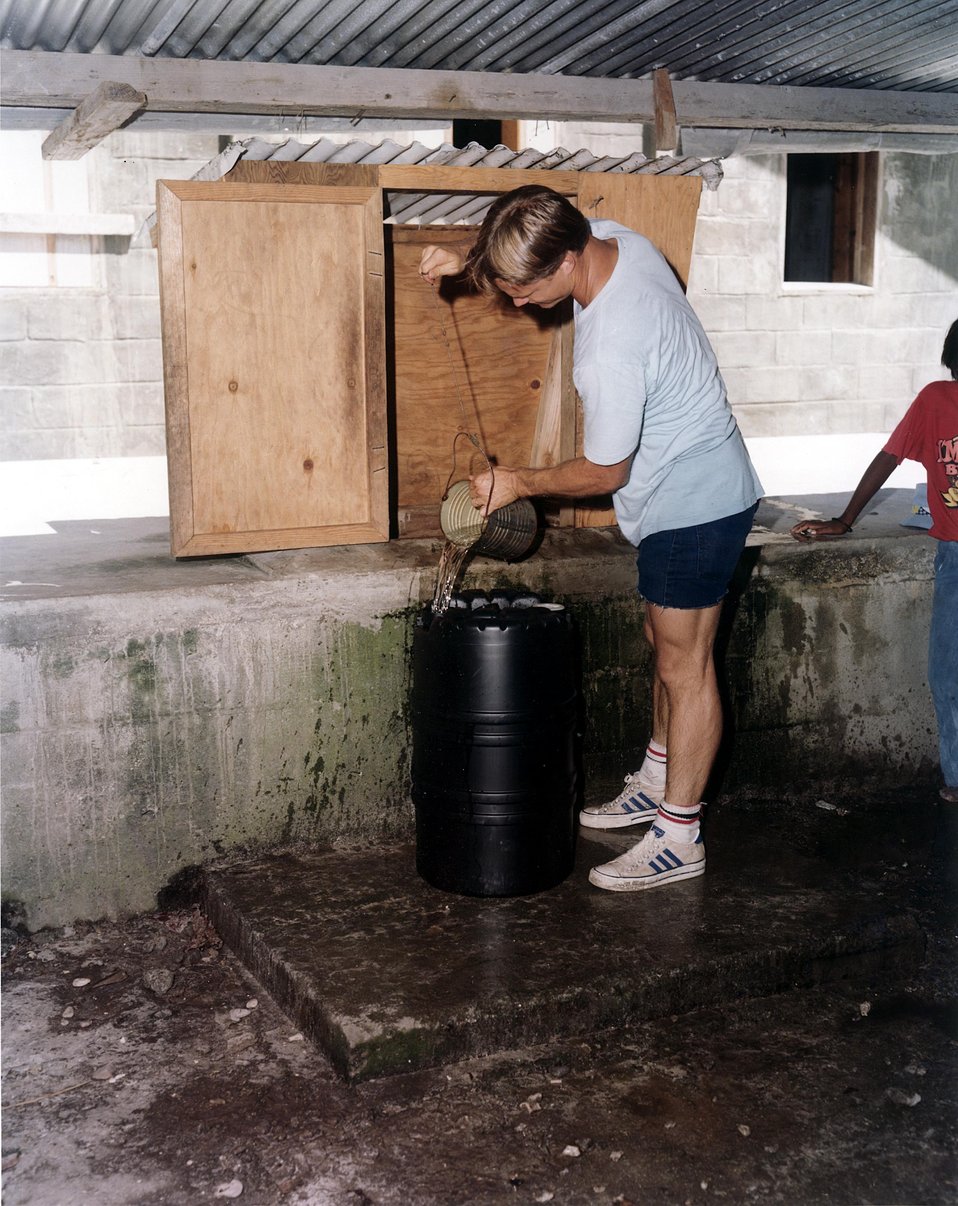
Southport, NC...Brunswick Steam Electric Plant site. Aerial view of the plant showing Unit 1 in the foreground incomplete with the steel work under construction. Unit 2 is in the background.